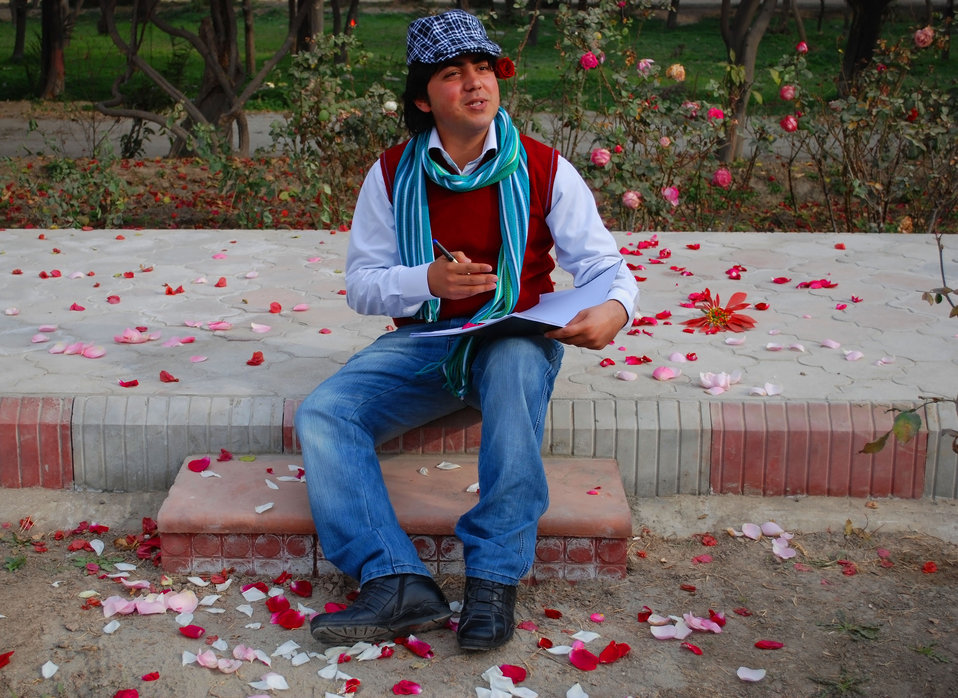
'On the Road' in Nangarhar Province